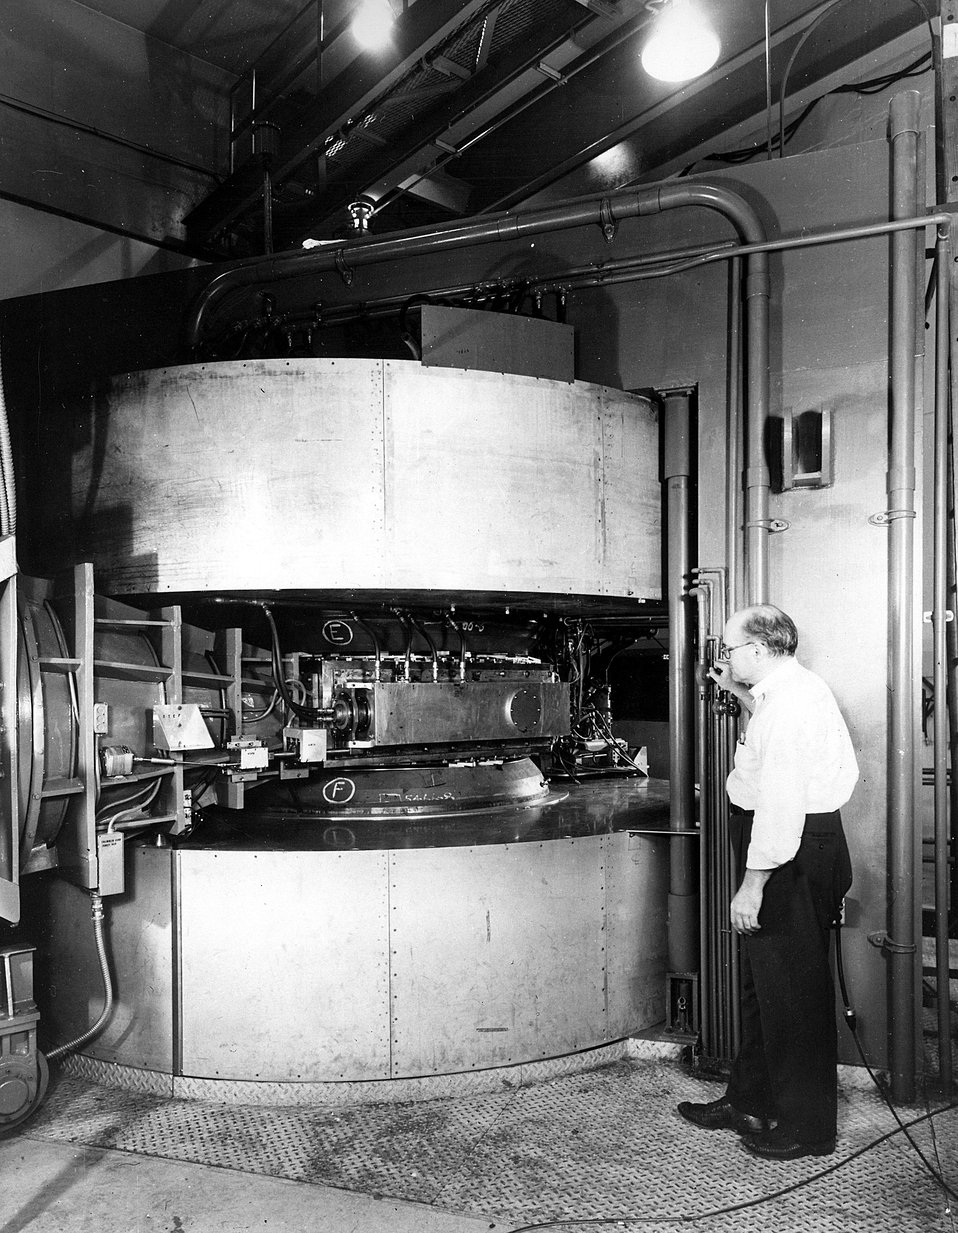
Argonne, 60' constant-frequency cyclotron.
c.1952